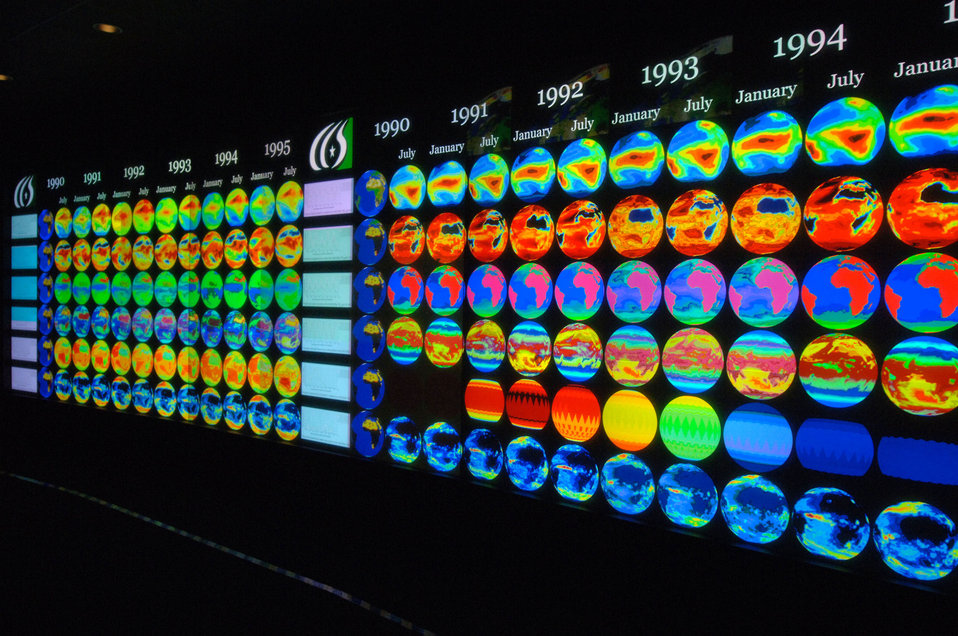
Everest Powerwall

05-290-392 DOE photo by Lynn Freeny

Everest Powerwall, a 30-foot screen for scientific study at Oak Ridge National Lab Oak Ridge Tennessee 10-20-2005